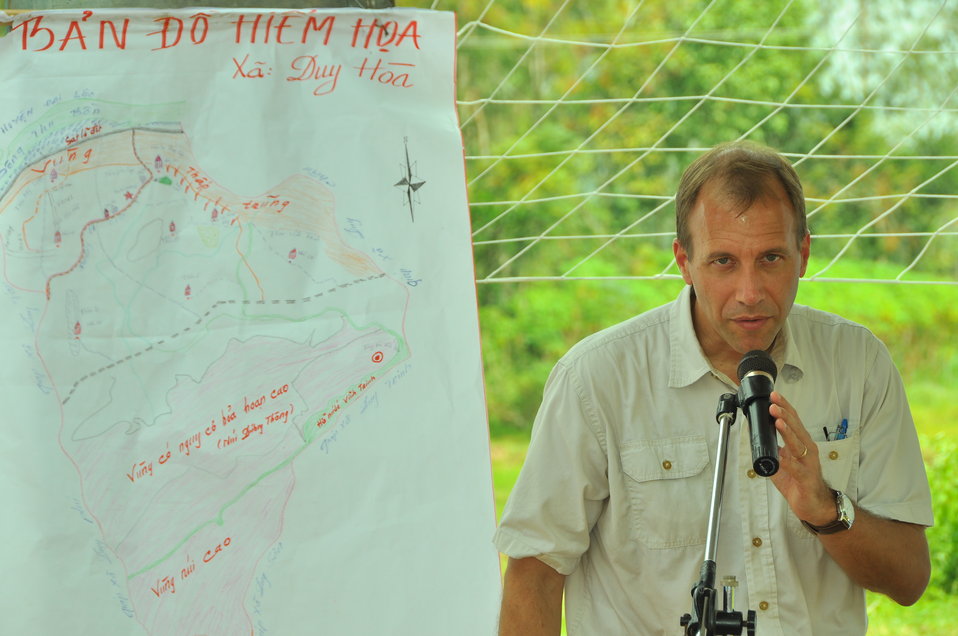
USAID, Red Cross Support Disaster Response Drill in Duy Hoa Commune, Quang Nam Province

Brian Heidel of USAID addresses the Duy Hoa Commune, Quang Nam Province
December 5, 2012